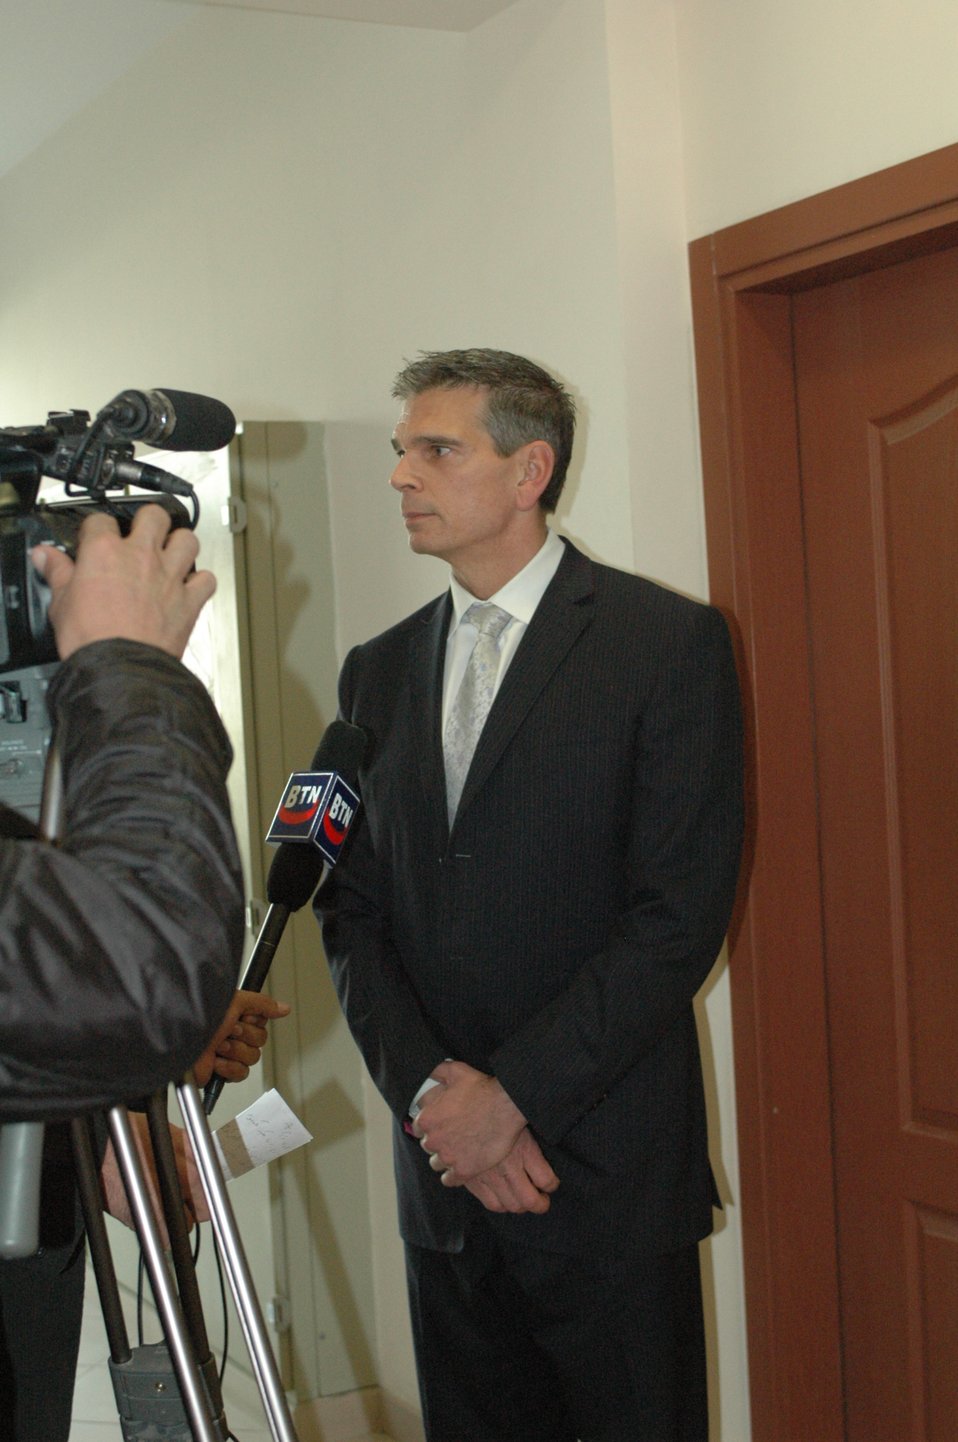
Community Based Stabilization Grants Ceremony, December 7, 2010